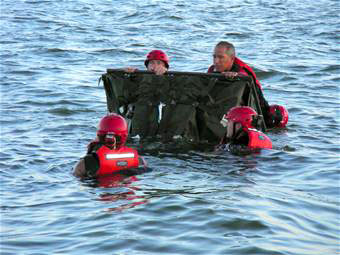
Pararescuemen train for space shuttle launch recovery

Pararescuemen from the 920th Rescue Wing inflate a motorized boat during open water recovery training in the Banana River near Patrick Air Force Base, Fla., on Friday, June 23.